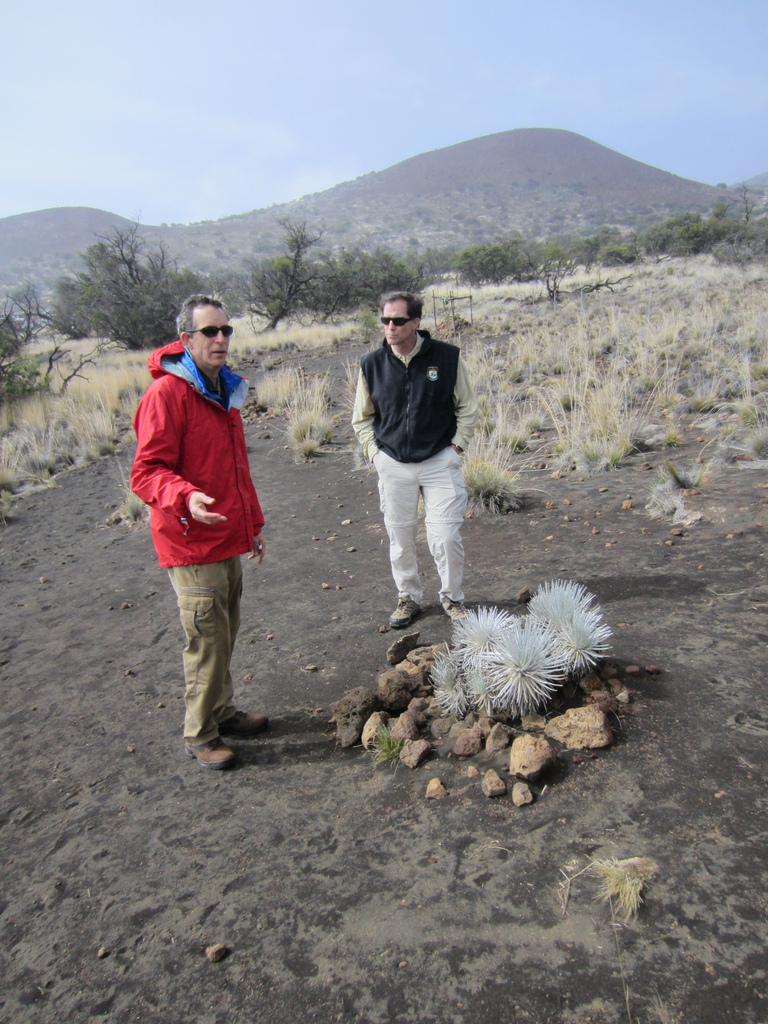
Dan Ashe on Mauna Kea

Dan sees a test plot of endangered silverswords on Mauna Kea.